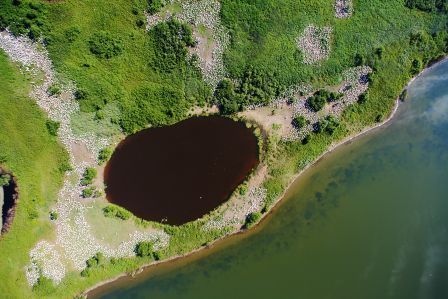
Aerial view of main island

Largest nesting island on Chase Lake National Wildlife Refuge showing nesting American White Pelicans.